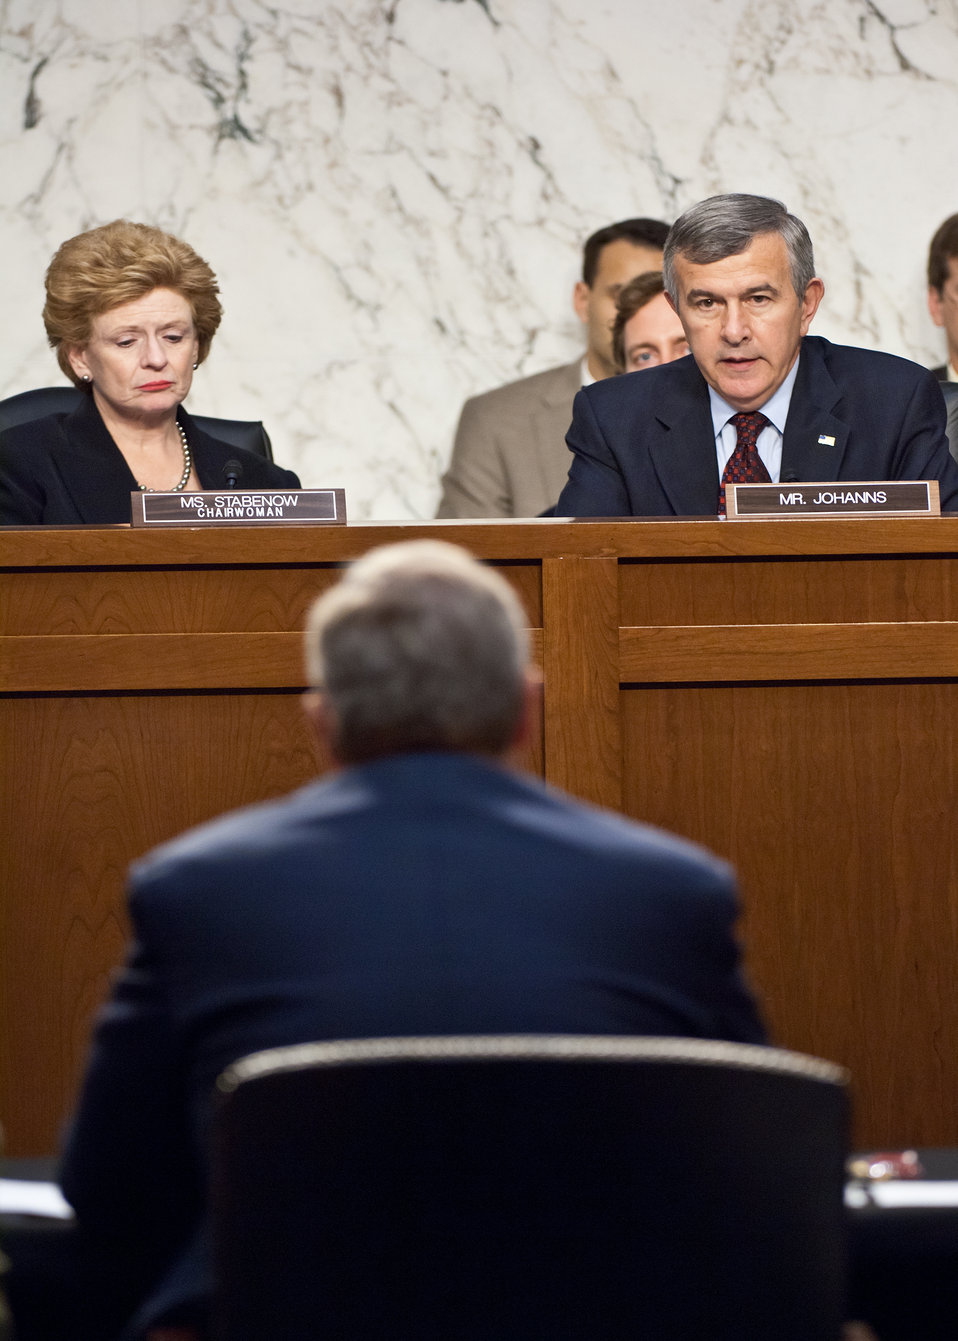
Senator Debbie Stabenow, MI, Chairwoman of the U.S. Senate Committee on Agriculture, Nutrition and Forestry and Senator and former Agriculture Secretary Mike Johanns, NE, question Agriculture Secretary Tom Vilsack during a hearing on the next Farm Bill in Washington, DC, Thursday, May 26, 2011.